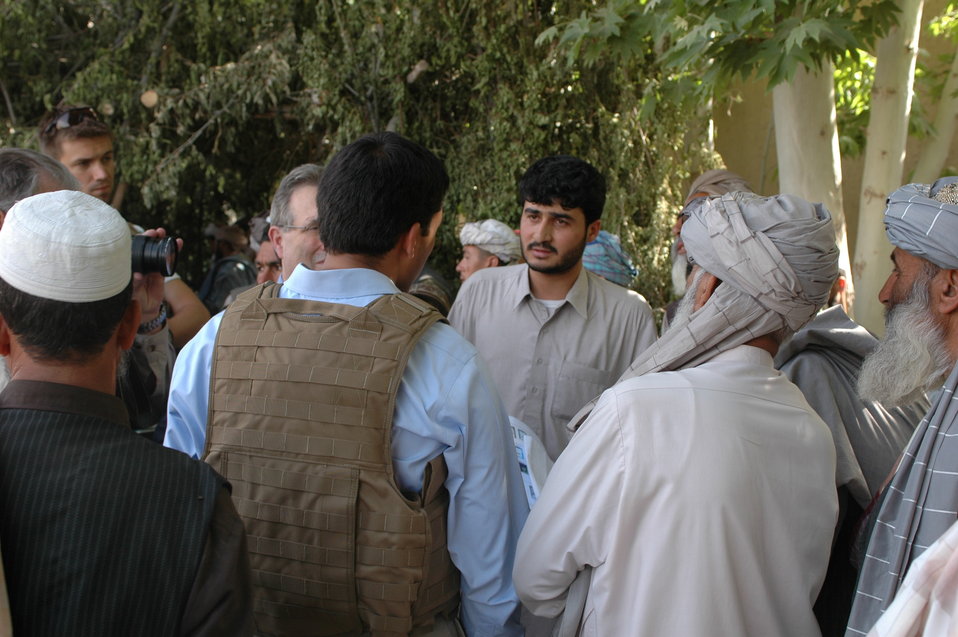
Dr Shah Visits Argandab April 10, 2010